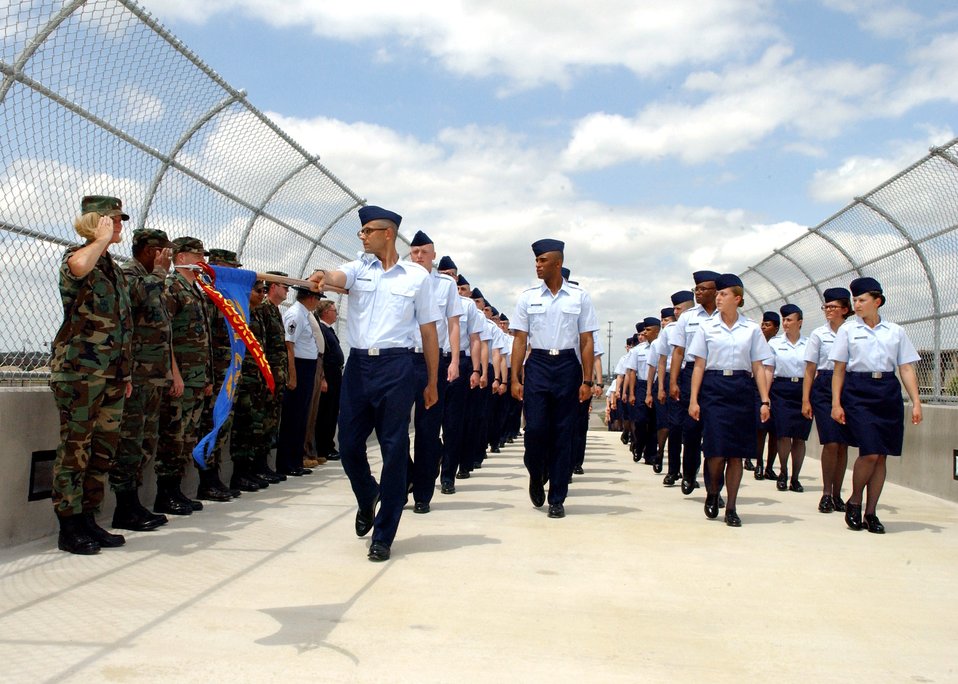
Eyes right

Brig. Gen. Mary Kay Hertog salutes basic military training flights 407 and 408 of the 322nd Training Squadron as they pass in review at Lackland Air Force Base, Texas, on Thursday, May 25, 2006. General Hertog is commander of the 37th Training Wing.